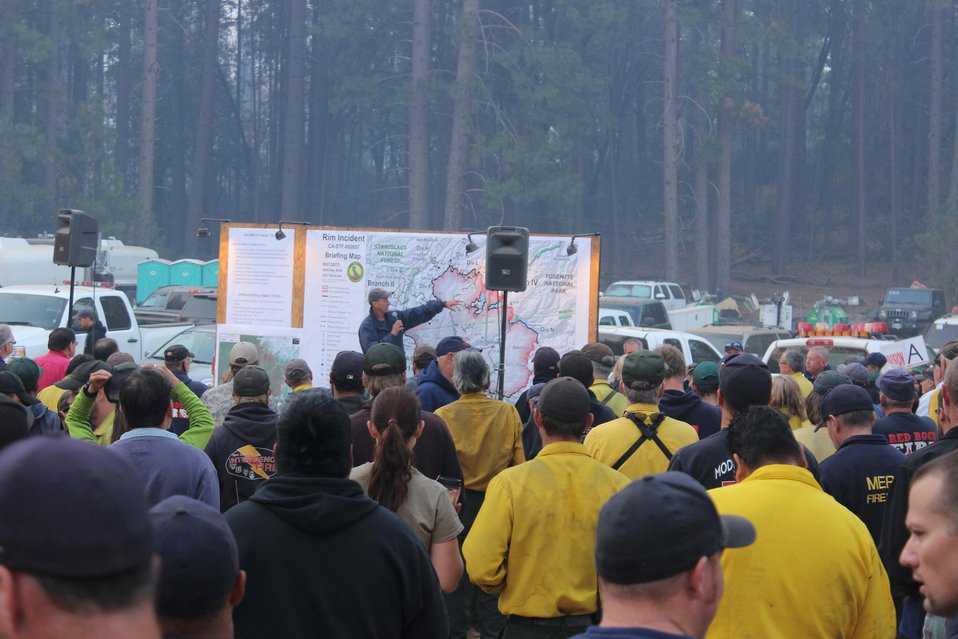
Morning briefing of fire crews is held at the Drew Meadow Incident Command Post to update crews on status of Rim Fire operations. The Rim Fire in the Stanislaus National Forest near in California began on Aug. 17, 2013 and is under investigation. The fire has consumed approximately 256,169 acres and is 84% contained.